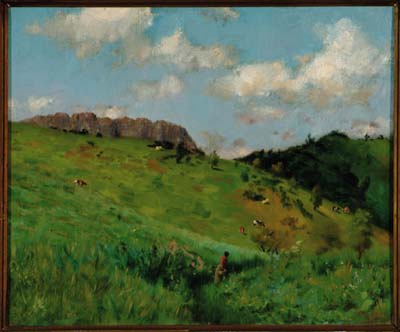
'Animales pastando'